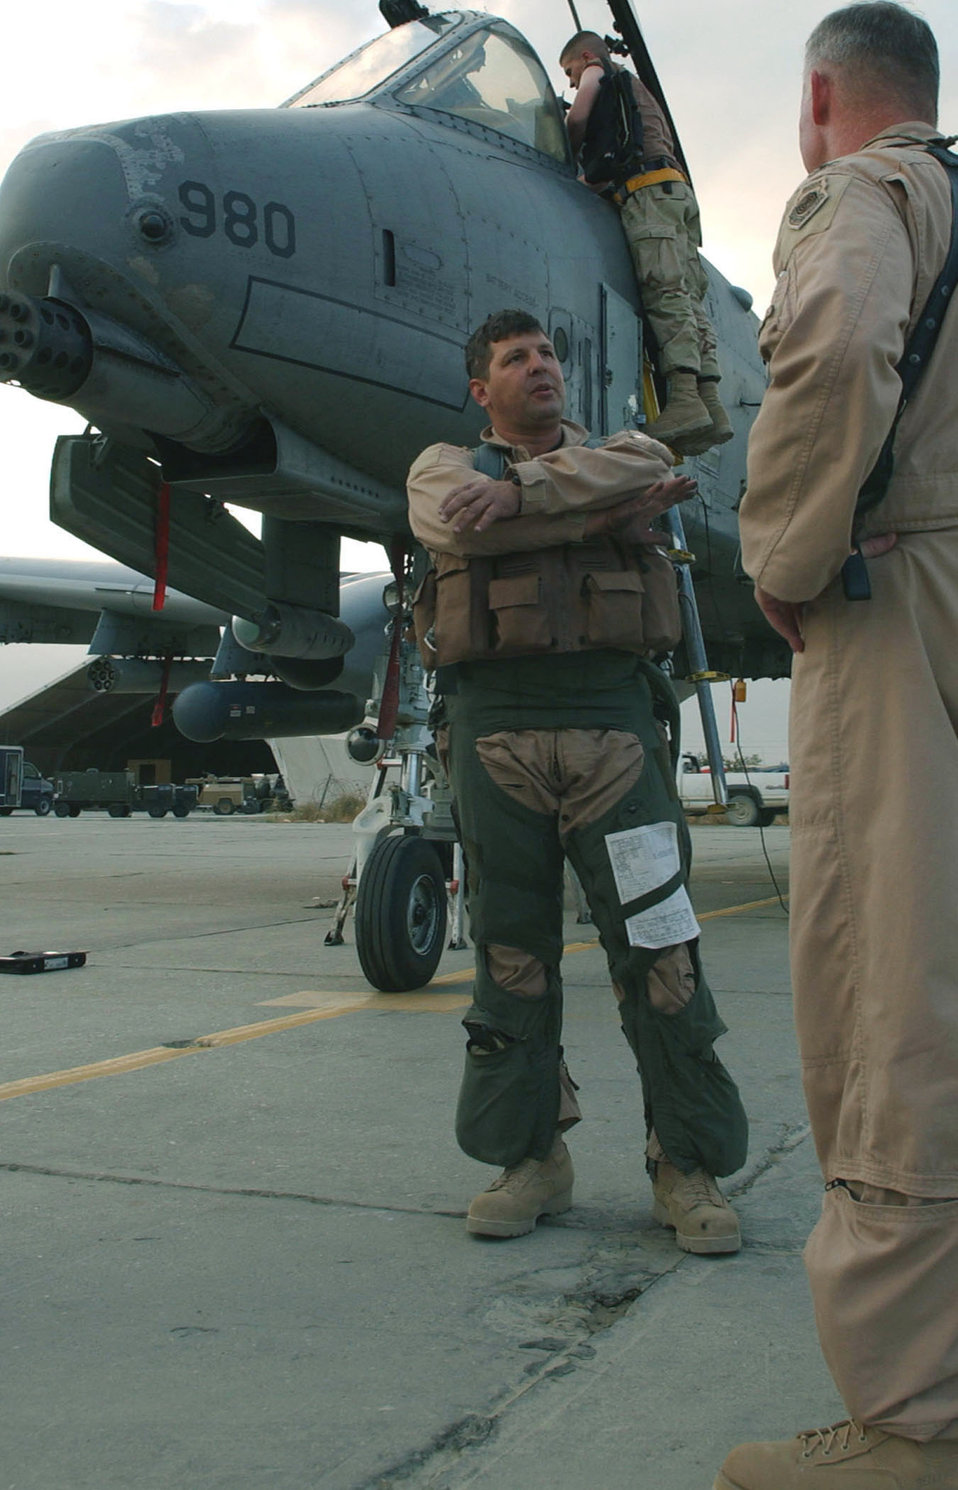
Reserve pilots not reserved when protecting ground troops

BAGRAM AIR BASE, Afghanistan -- Maj. Charlie tells the 455th Expeditionary Operations Group commander about how he and the flight leader for